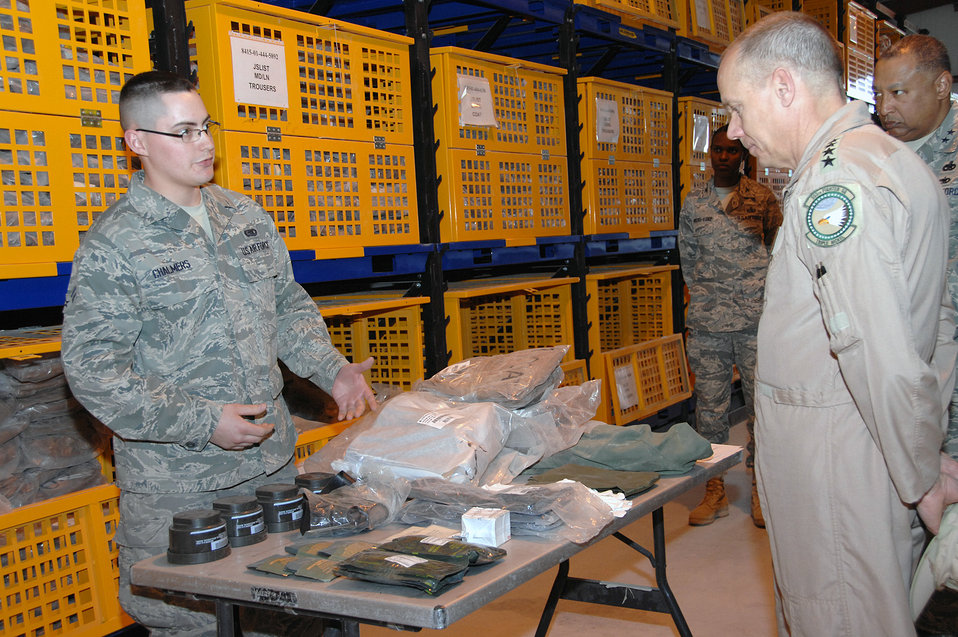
AFMC commander visits Southwest Asia

Airman 1st Class Randy Chalmers briefs Gen. Donald Hoffman Feb. 9 on the contents of the chemical warfare bag being issued to the general for his trip into the Southwest Asia area of operations. General Hoffman, commander of Air Force Materiel Command, visited the 386th Air Expeditionary Wing's Expeditionary Theater Distribution Center as part of a multi-base visit. Airman Chalmers is with the 386th Expeditionary Logistics Readiness Squadron.